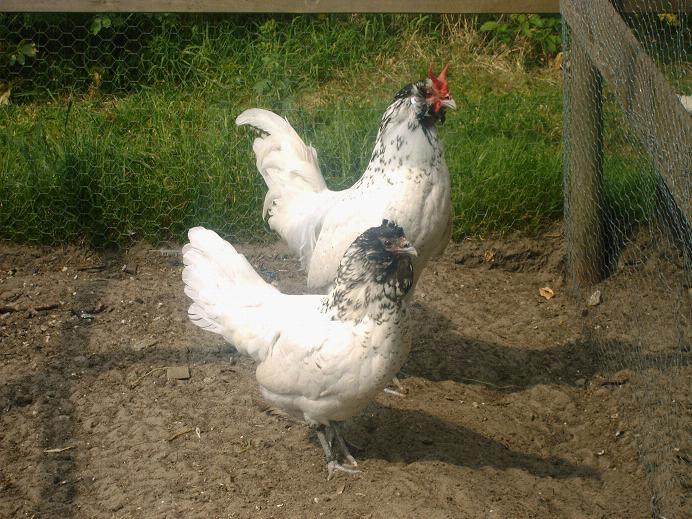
Nederlands: Nederlandse Uilebaard haan en hen. Kleurslag: Moorkop.